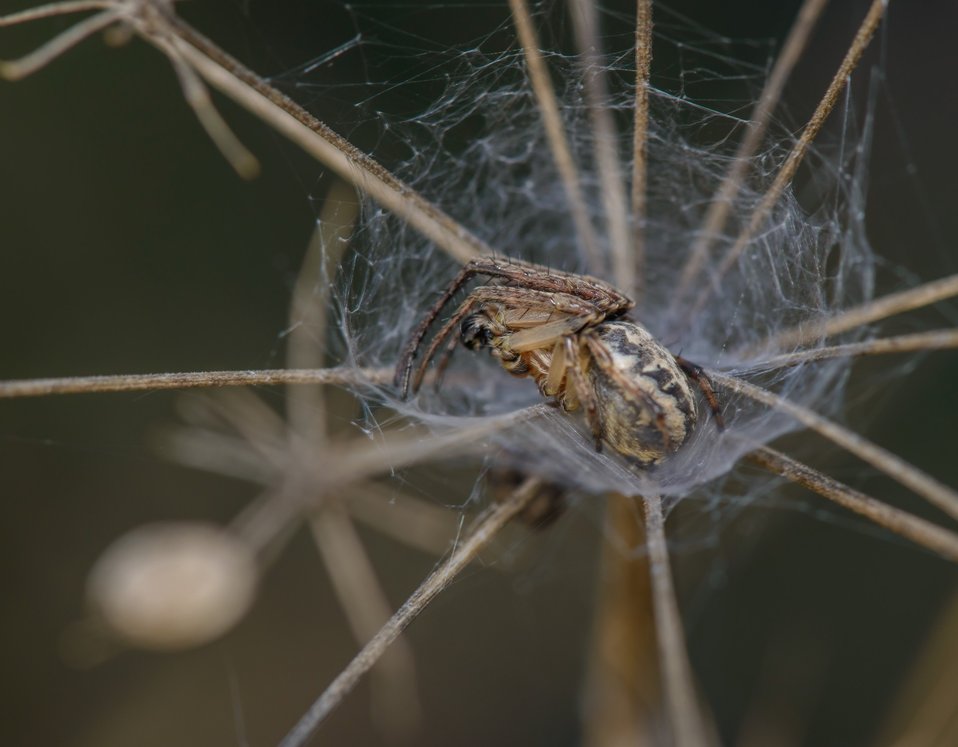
In the web

Resting spider.